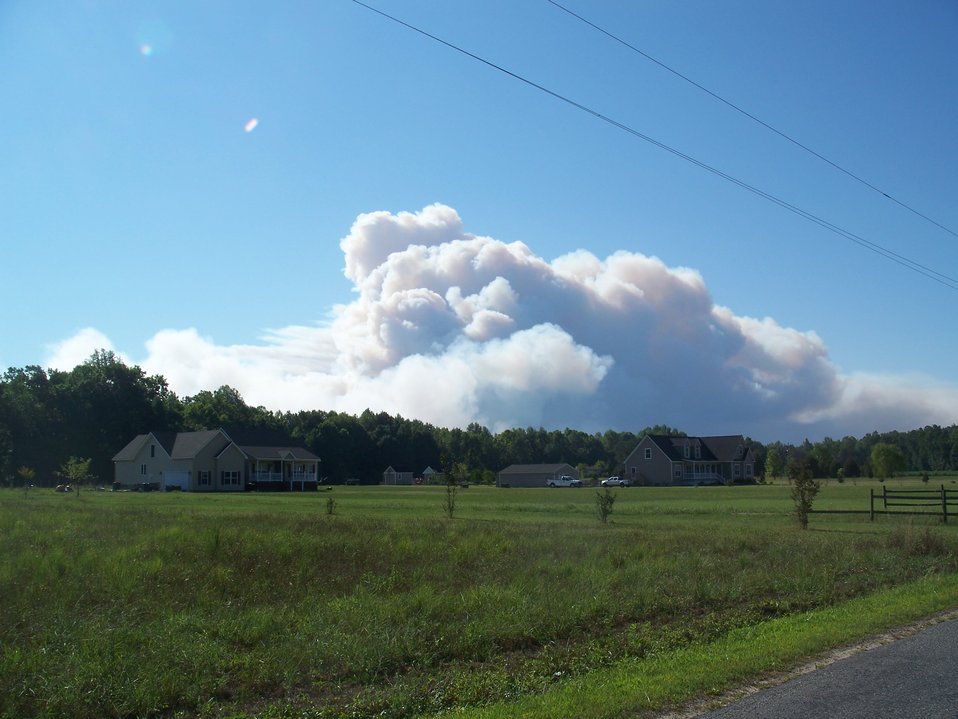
Smoke plume Lateral West Fire

Suffolk, VA, August 2011: Smoke billows out of the Lateral West Wildlfire burning on Great Dismal Swamp National Wildlife Refgue. Although the fire was no imminent danger to homes, smoke could be seen and smelled from communities miles away from the fire.